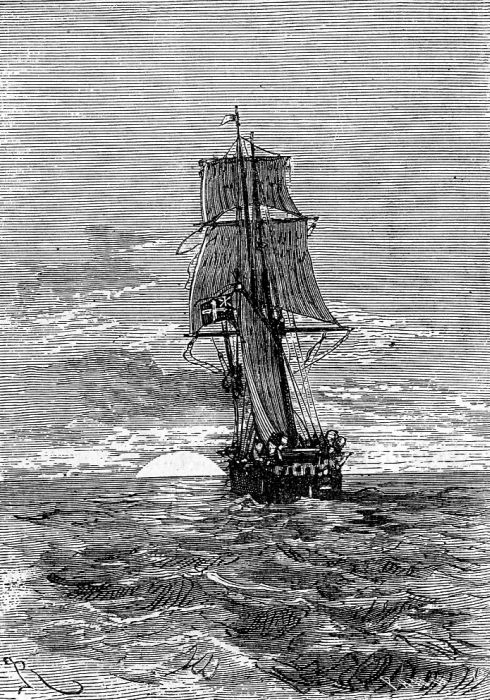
An ilustration from the novel 'In Search of the Castaways; or Captain Grant's Children' by Jules Verne drawn by Édouard Riou. Polski: Ilustracja powieści Juliusza Verne'a 'Dzieci kapitana Granta' autorstwa Édouarda Riou. Français : 'Les Enfants du capitaine Grant', Édouard Riou.